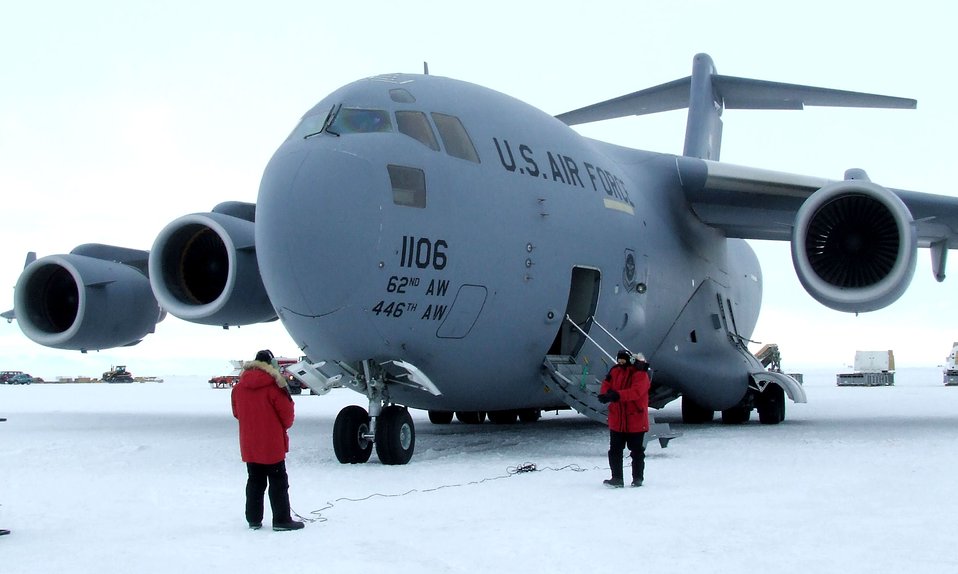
Operation Deep Freeze 2008-2009 season begins

C-17 Globemaster III's from McChord Air Force Base, Wash., will be shuttling supplies, equipment and personnel for Operation Deep Freeze. The 2008-2009 season for ODF begins Sept. 4.